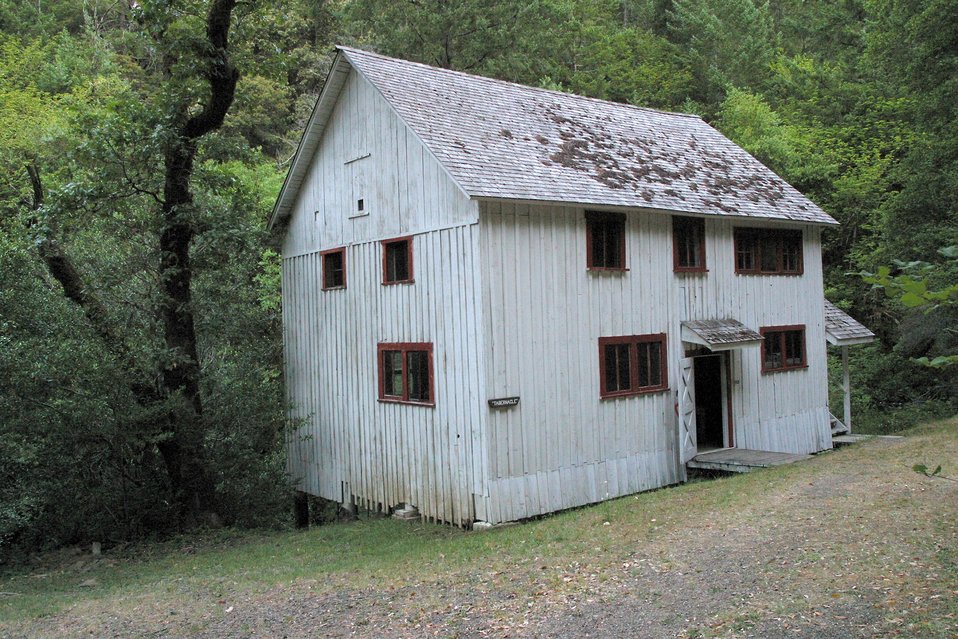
The building at the Rogue River Rance calle the Tabernacle.